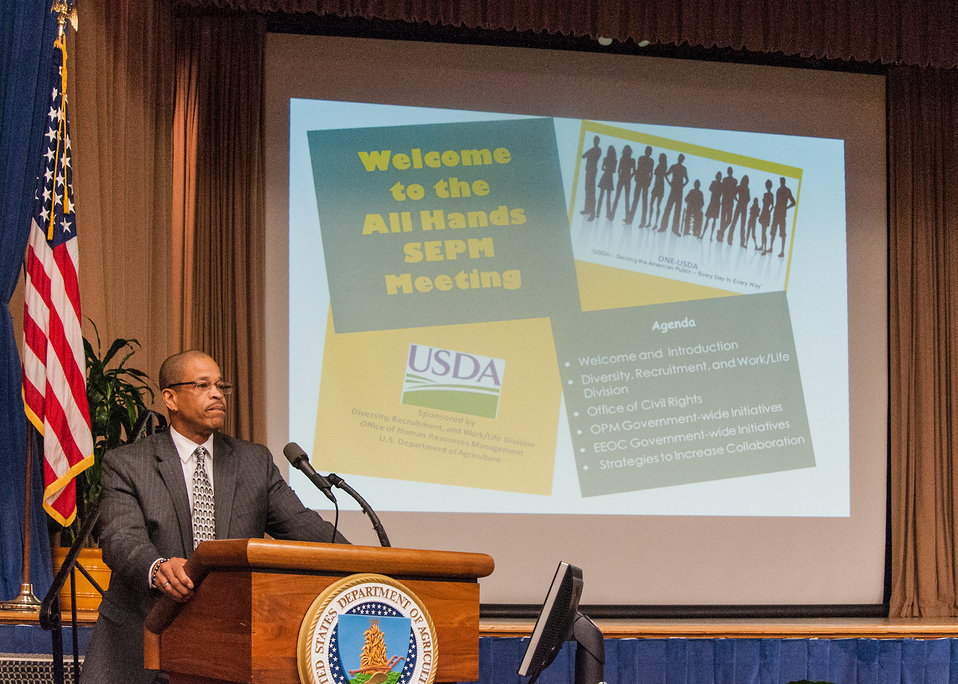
U.S. Department of Agriculture (USDA) Office of Human Resources Management (OHRM) Chief Human Capital Officer William P. Milton, Jr. welcomes and introduces speakers at the First Annual All Hands Special Emphasis Program Managers (SEPM) Meeting at the U.S. Department of Agriculture Jefferson Auditorium in Washington, D.C. on Wednesday, Mar. 13, 2013.